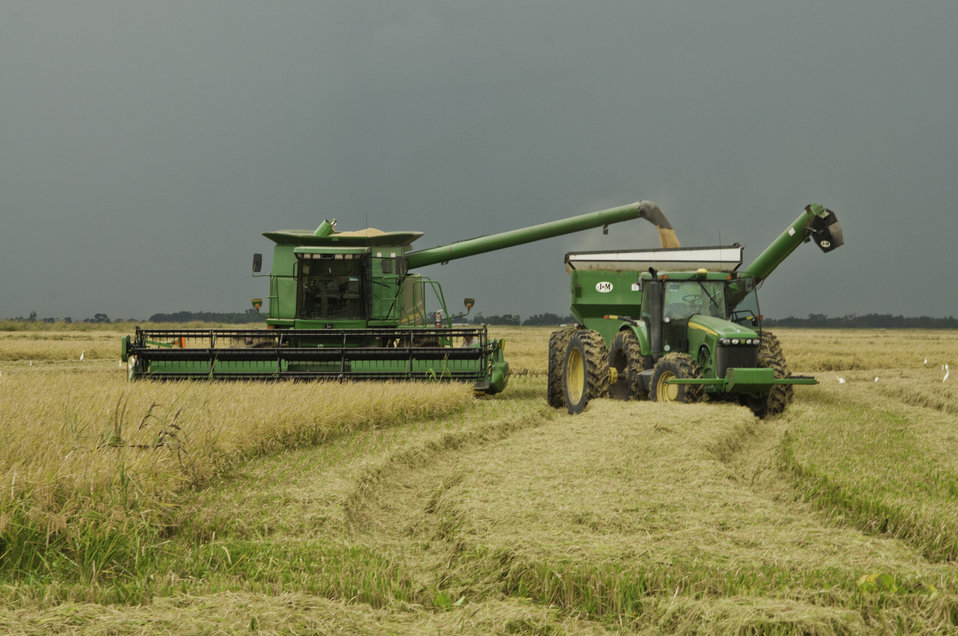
Rice is harvested in Rosharon, TX on Aug. 23, 2013.